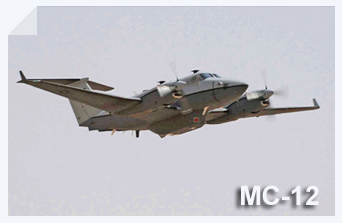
MC-12

The MC-12W is a medium- to low-altitude, twin-engine turboprop aircraft. The primary mission is providing intelligence, surveillance and reconnaissance, or ISR, support directly to ground forces.